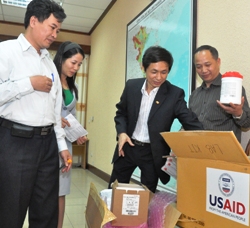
USAID Supplies personal protective equipment and disinfectant to help control infection in Vietnam.